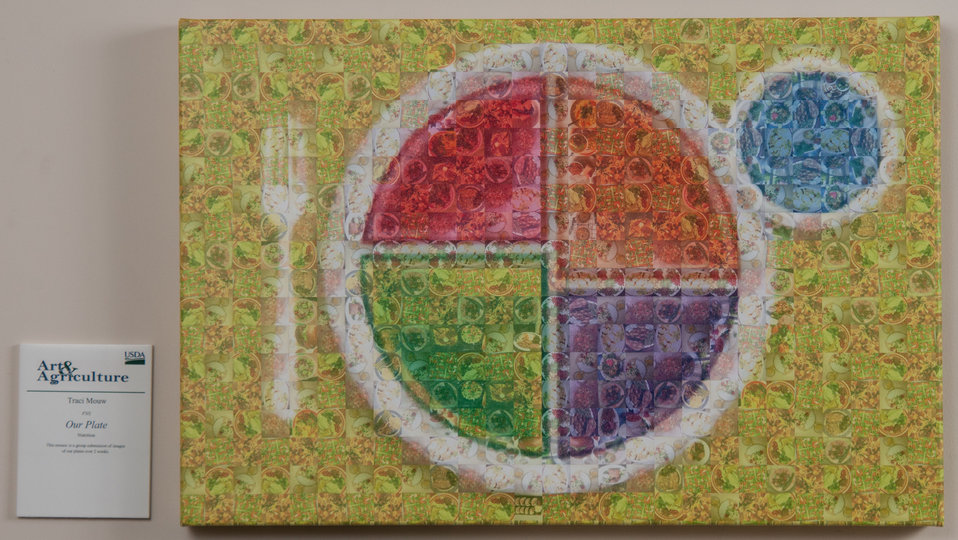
Online Viewer's Choice entries of the 2013 Art & Agriculture, Tuesday, July 9, 2013, in the South Building, Washington, D.C. Themes were expressed by employees from across the department and the contest was open to full-time and part-time USDA employees. Winning artwork will be displayed till the end of the year. U.S. Artistic expression is a creative outlet that is vital for an individual to grow and develop.